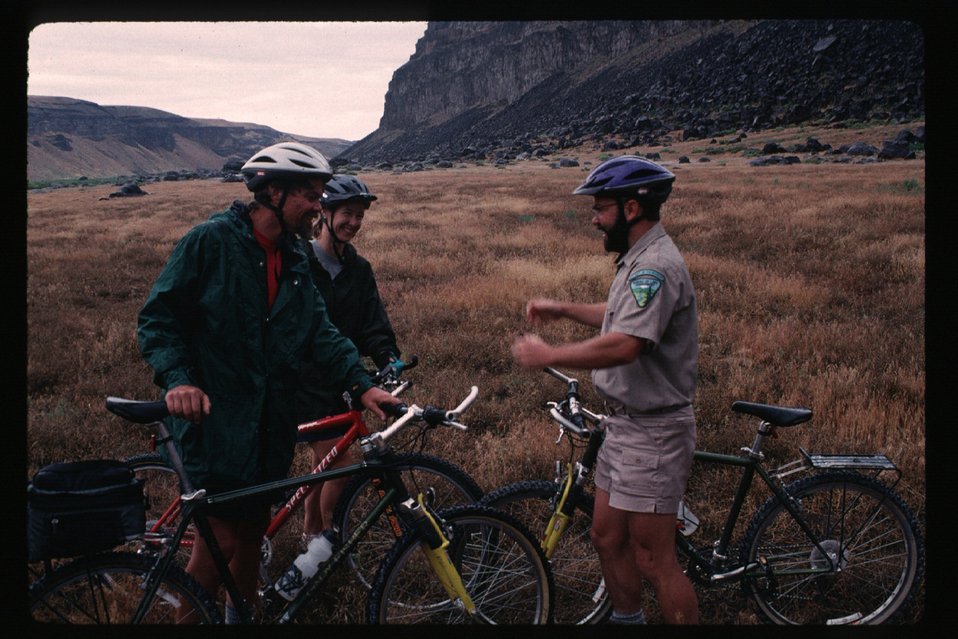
Bikers on Boise Foothills Boise Front bicyclists Four Rivers Field Office LSRD Lower Snake River District